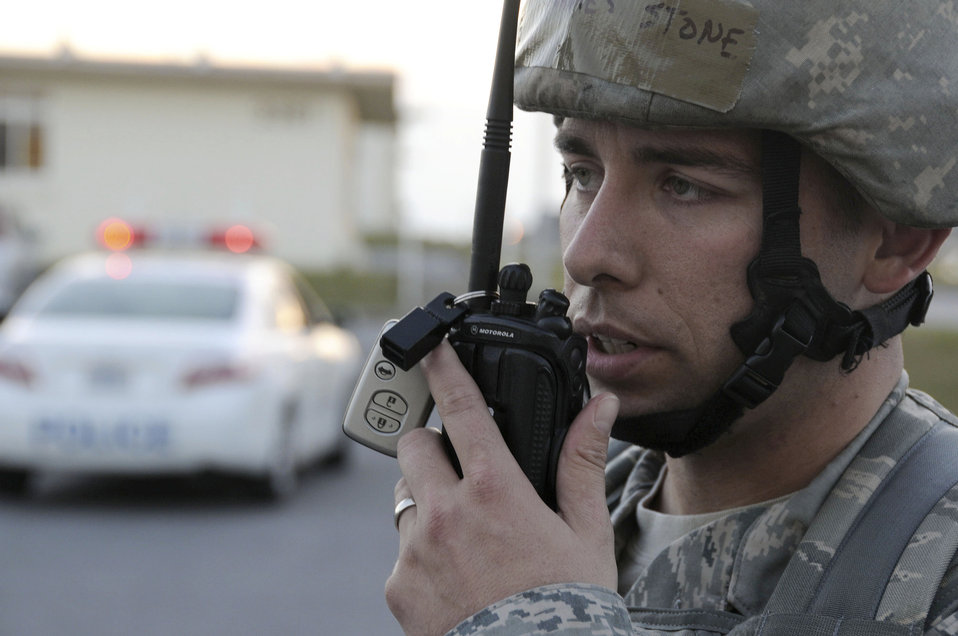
Only authorized communications allowed

Staff Sgt. James Stone radios information to the command post during a local operational readiness exercise Jan. 19, 2011, at Kadena Air Base, Japan. This scenario tested the security forces' ability to respond to a building that had been